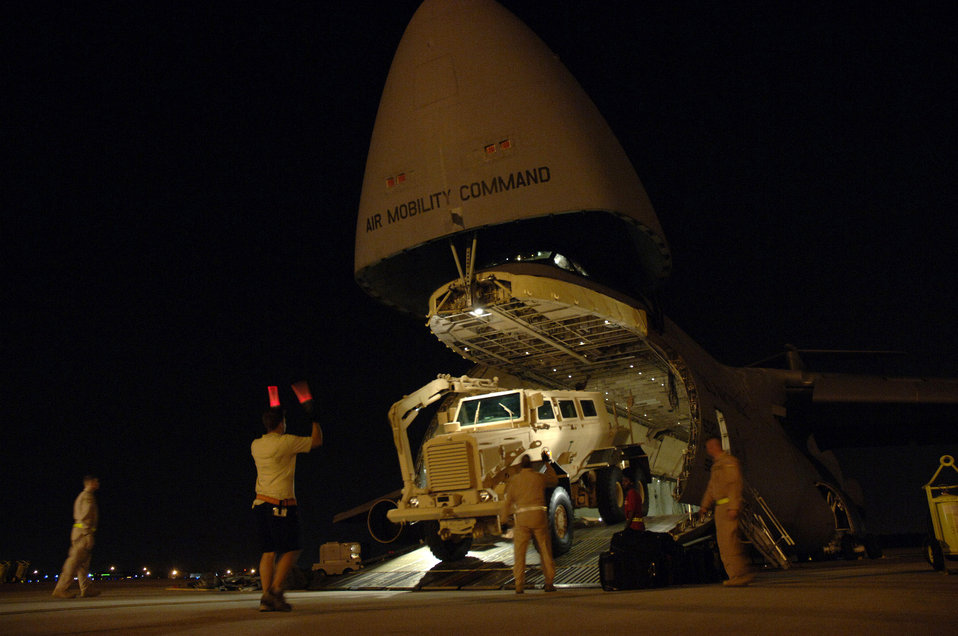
Airmen to deliver 10,000th MRAP to troops

Airmen load a mine-resistant ambush-protected vehicle onto a C-5 Galaxy Aug. 16, 2007, at Charleston Air Force Base, S.C. The C-5 is assigned to the 436th Airlift Wing Dover AFB, Del.